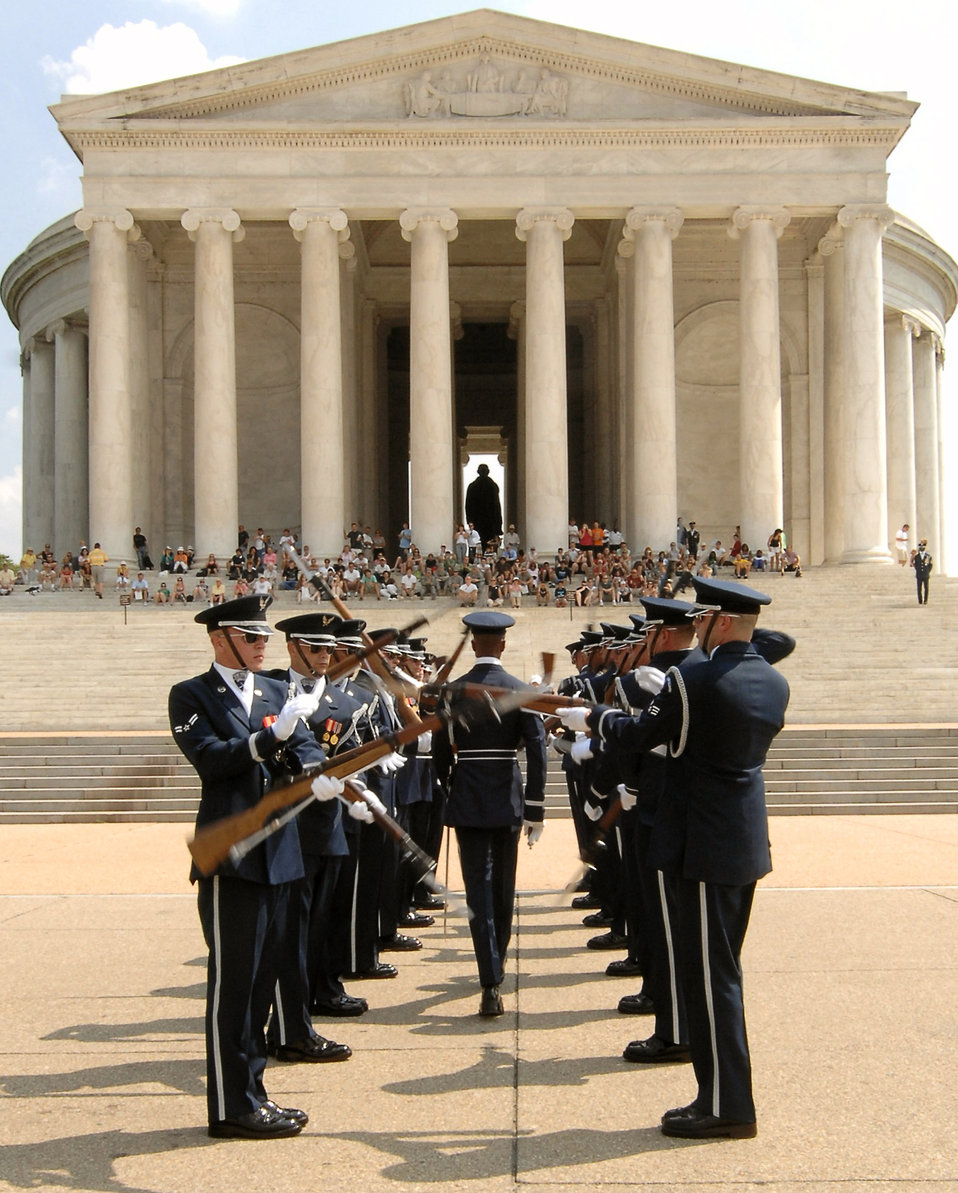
Monumental performance

The United States Honor Guard Drill Team performs at the Jefferson Memorial in Washington D.C July 8 during their Summer Drill Series. These drills will be performed around the National Capitol Region until the 29th of July.